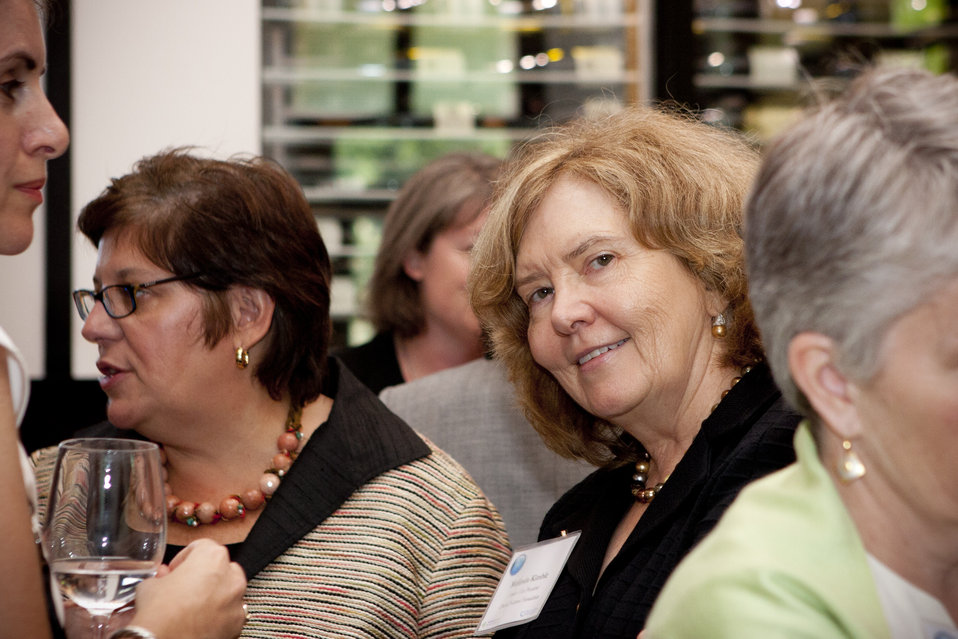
WomenandEnergy 30